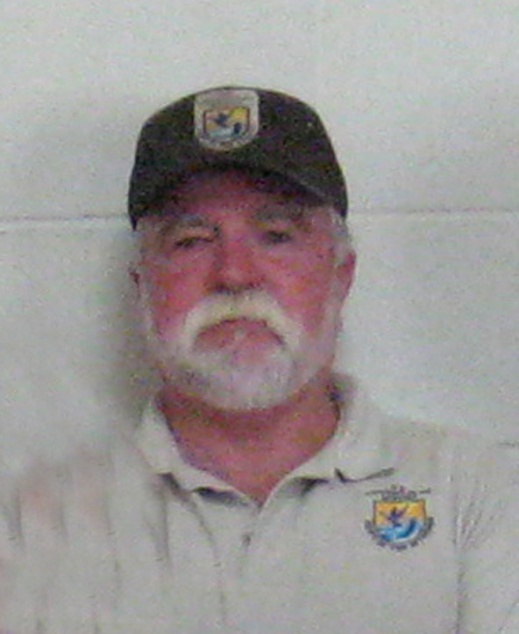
Bruce Creef, the Alligator River NWR Refuge Maintenance Supervisor, served in the U.S. Coast Guard from 1970 to 1974 and joined the Service in 1974.